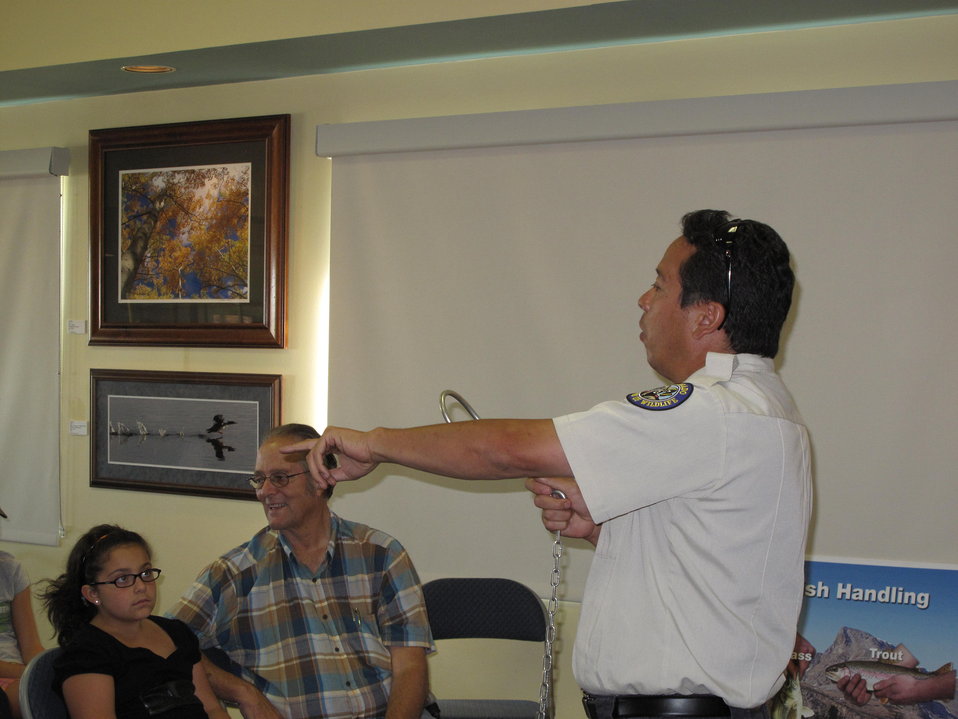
Learning Safe Fishing

Scott Gilmore (ELK) teaching the children about fish hook safety before they go fishing.